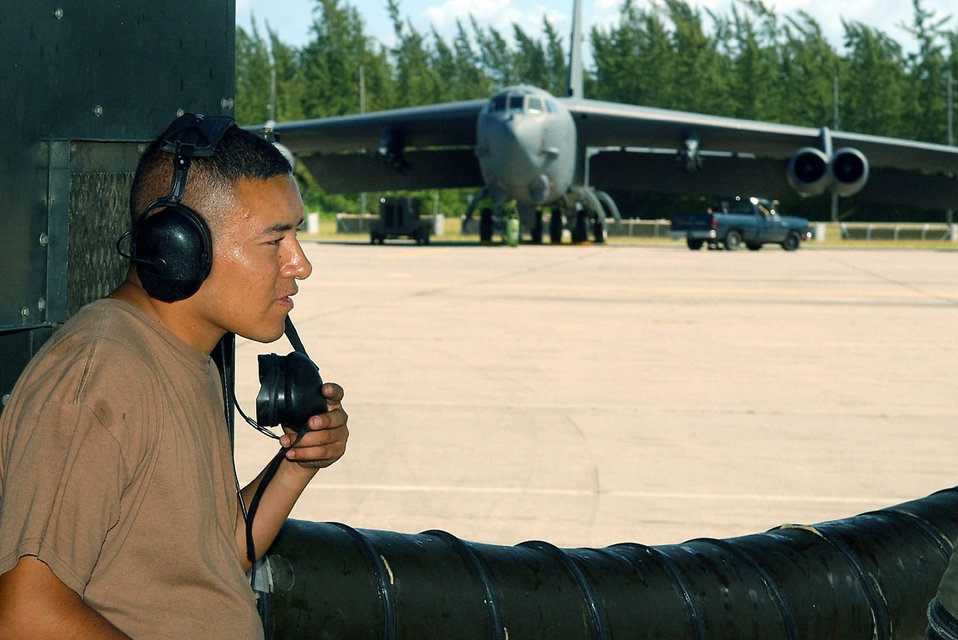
Waiting for a check

FILE PHOTO -- An airman waits to conduct final checks on a bomber prior to launching the aircraft on another mission in support of Operation Enduring Freedom.